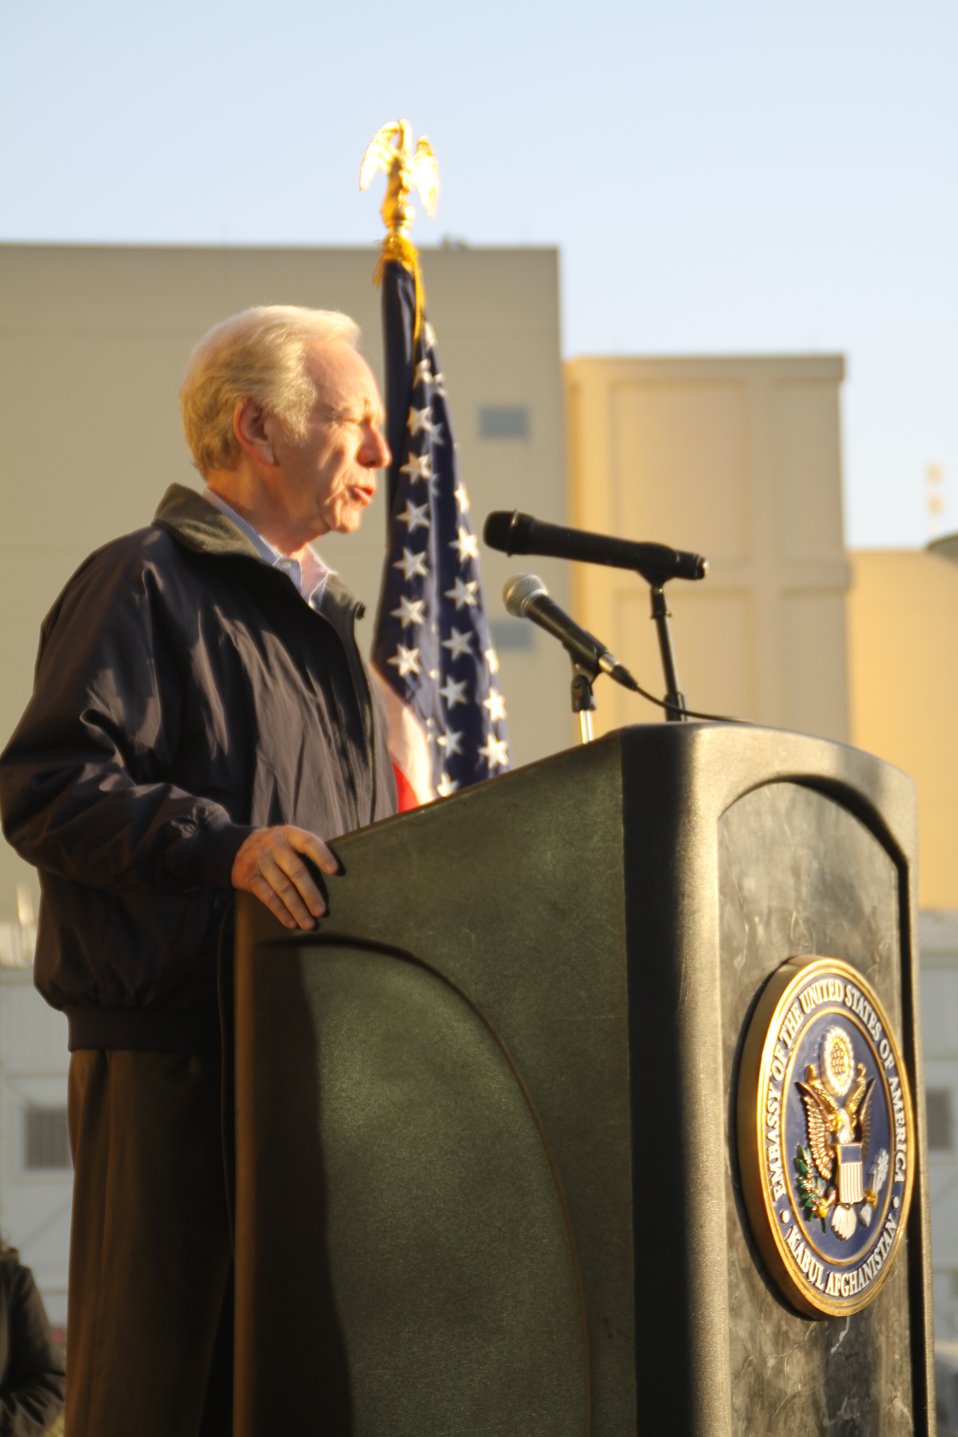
Senator Lieberman